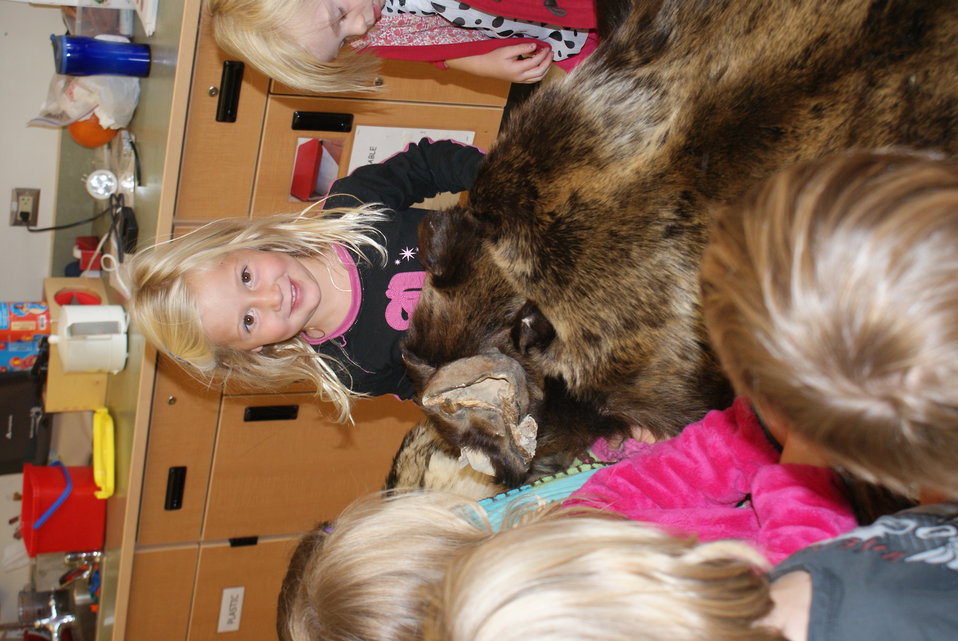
Scientists in the Community Program

U.S. Fish and Wildlife Service Mountain-Prairie Region Deputy ARD for External Affairs, Matt Kales, introduces early childhood education students at William Roberts Elementary School in Denver to some of Colorado's native and historic wildlife species.